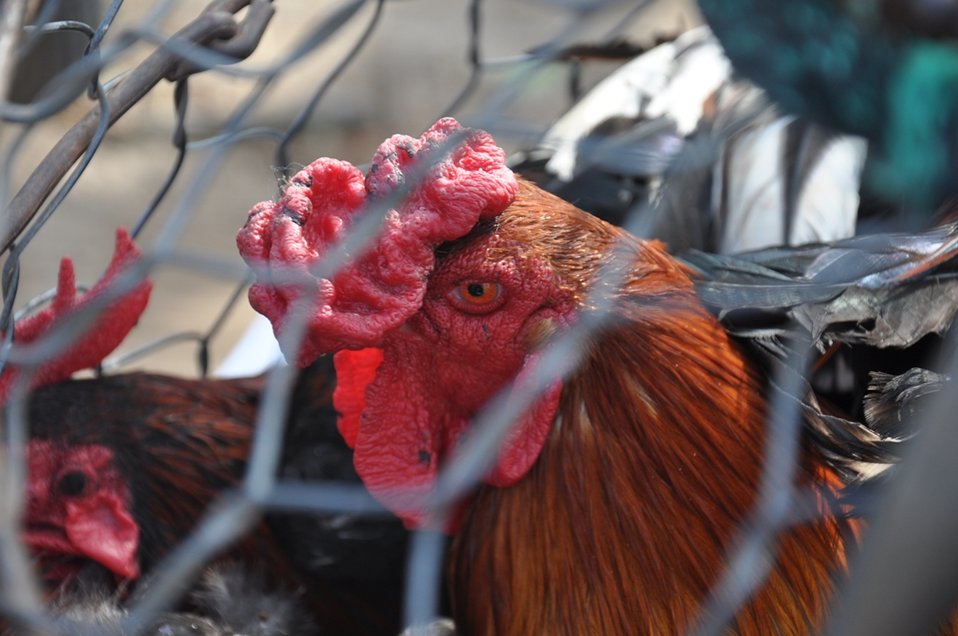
USAID helps Vietnam combat bird flu